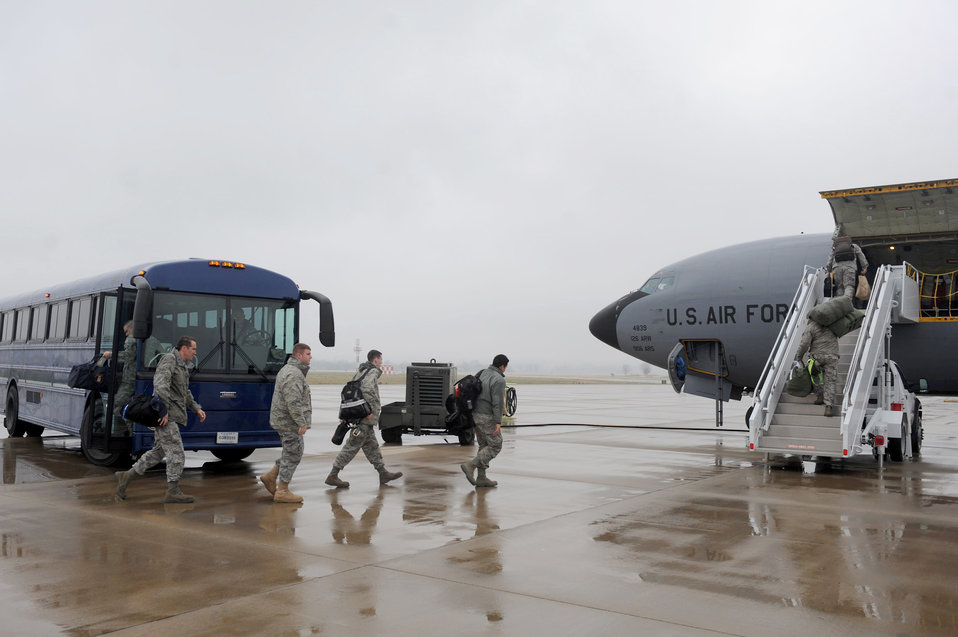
Guardsmen deploy in support of Operation Odyssey Dawn

Members of the Illinois Air National Guard's 126th Air Refueling Wing board a KC-135 Stratotanker March 25, 2011, at Scott Air Force Base, Ill., in preparation for deployment in support of Operation Odyssey Dawn.